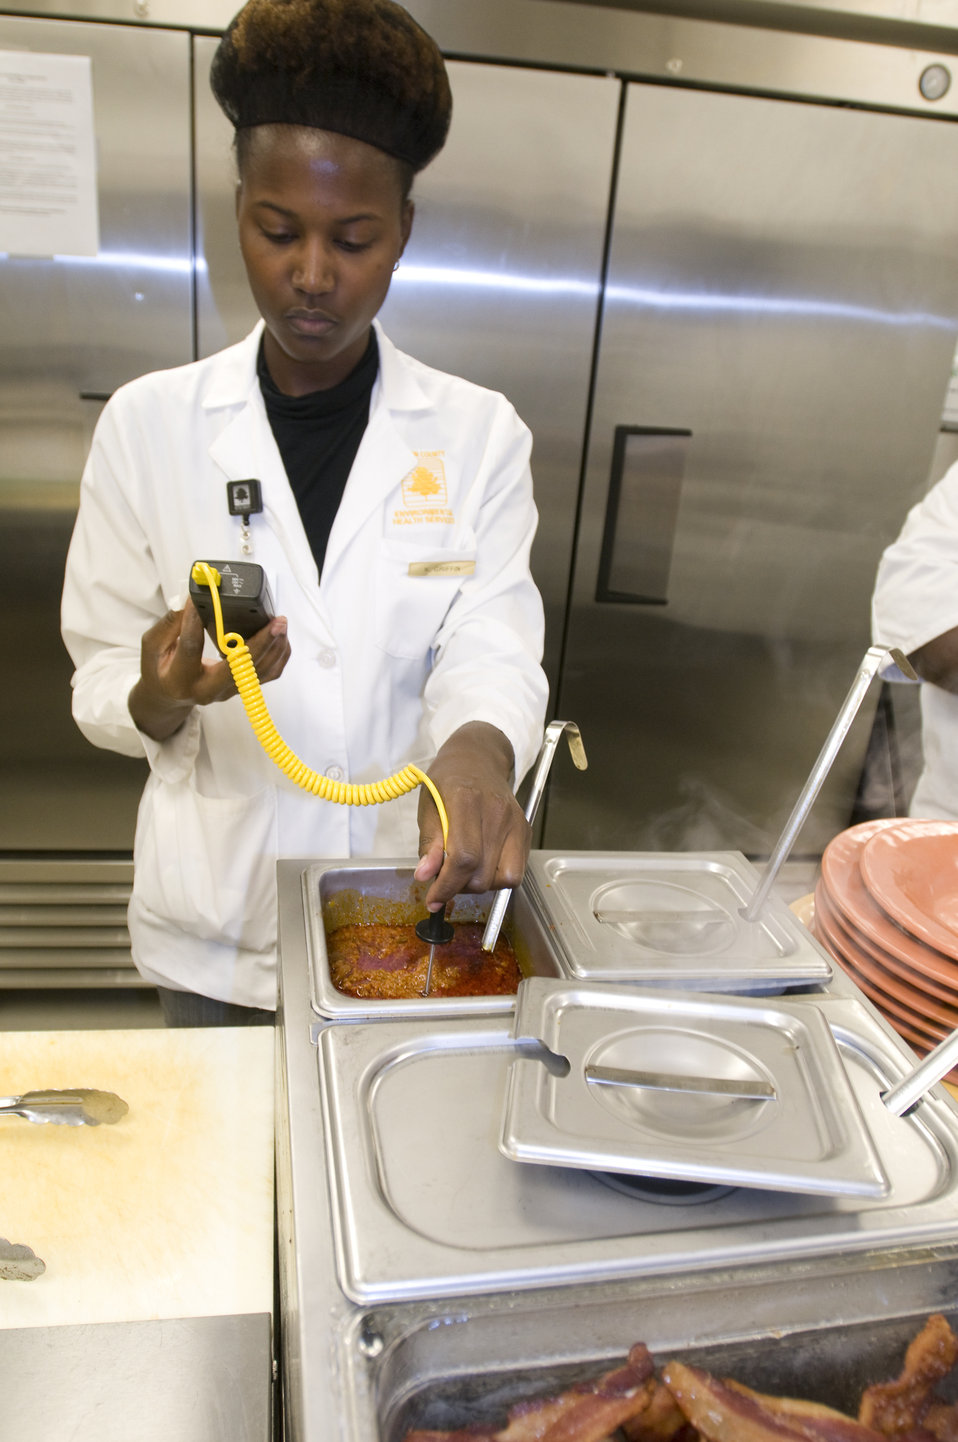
The state-appointed public health inspector pictured here, was checking the sanitary conditions inside a kitchen. At this point in her inspection, was taking a reading of a food's temperature by using a thermal probe, which provides an interior temperature that must be found to be within safe-range limits.